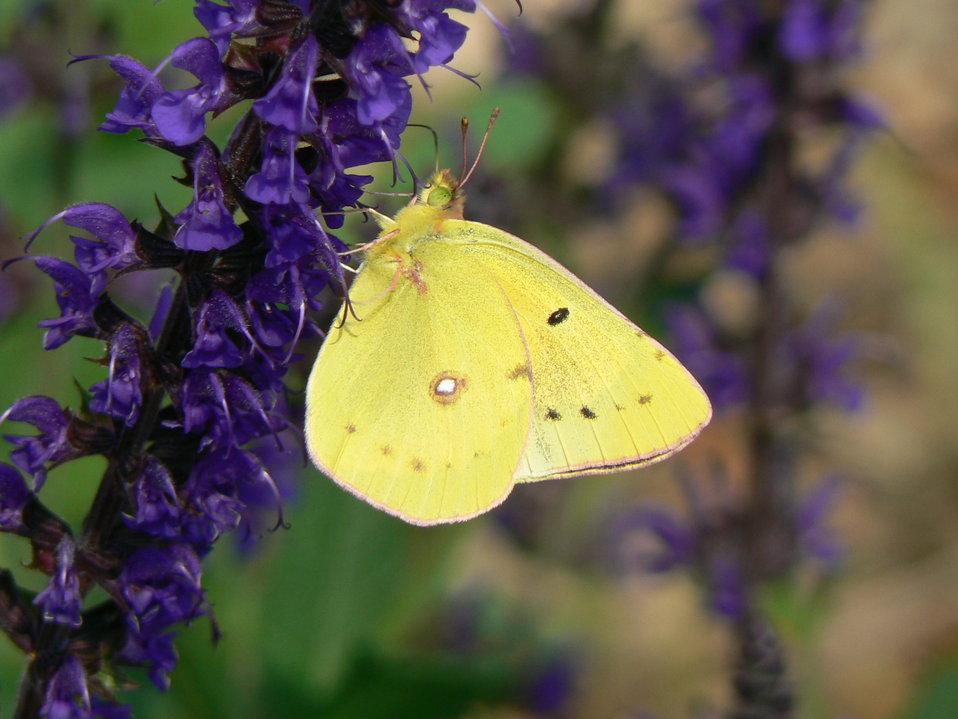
Clouded sulphur on salvia at Cape May National Wildlife Refuge.